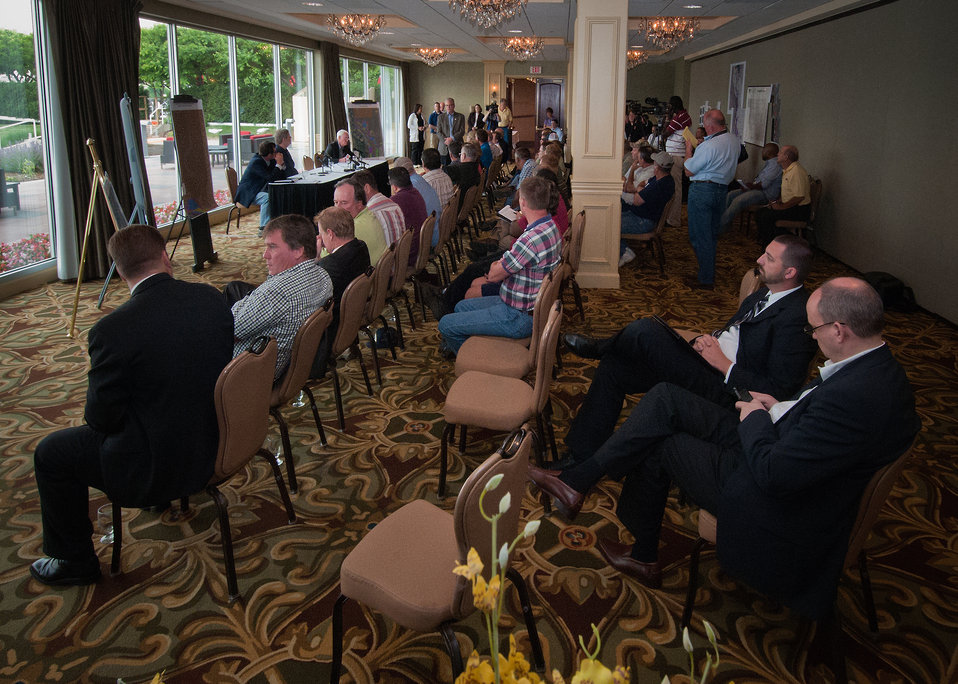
Matt Paul, U. S. Department of Agriculture, Press Secretary and Director, Office of Communications (seated right) checks emails as John Berge, Executive Director, United States Department of Agriculture, National Food and Agriculture Council, Agriculture Secretary Tom Vilsack and Dayle Williamson, State Agriculture Representative for Senator Ben Nelson speak with producers regarding agricultural lands devastated by the Missouri River flood and the assistance that USDA can provide in this time of need. The Missouri river has flooded hundreds of acres in Nebraska and Iowa. Seated next to Paul is Nathan Vander Plaats, Regional Director for Senator Tom Harkins, Iowa. On Friday, June 17, 2011.